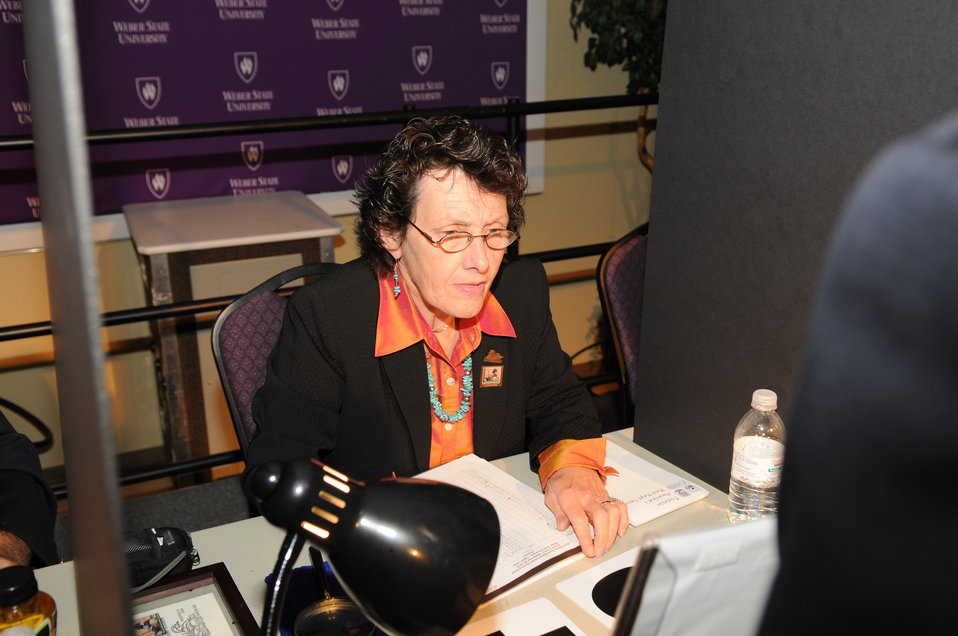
Judging

The U.S. Fish & Wildlife Service sponsored the 2012 Federal Duck Stamp Art Contest September 28 and 29 in Ogden, Utah, at Weber State University. A panel of five judges was responsible for choosing the art work used to design the 2013-2014 Migratory Bird Hunting and Conservation Stamp.